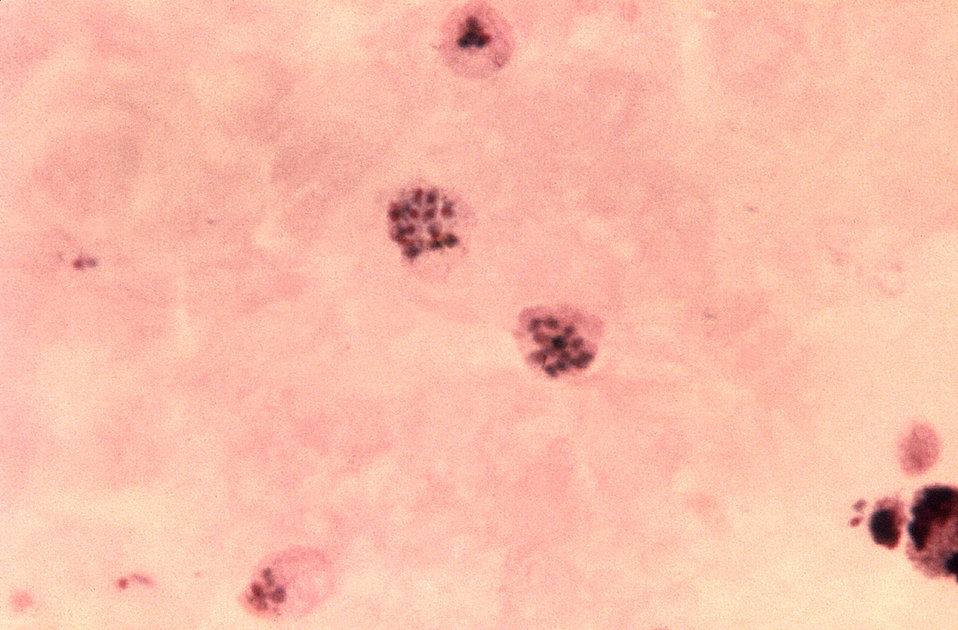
This thick film Giemsa stained micrograph shows two mature Plasmodium vivax schizonts each containing merozoites.